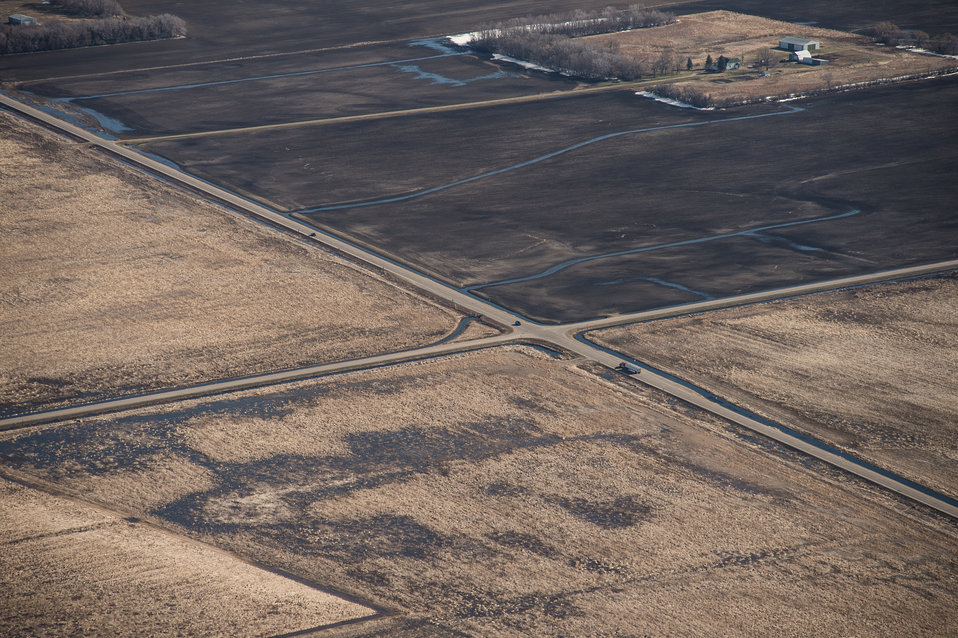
Ehlert U.S. Department of Agriculture (USDA) Natural Resources Conservation Service (NRCS) Wetland Reserve Program (WRP) in Wilkin County, MN, on Tuesday, April 30, 2013. For information about this and other programs from the USDA Red River Basin Initiative (RRBI) please see www.mn.nrcs.usda.gov/news/features13/RRBI.html.